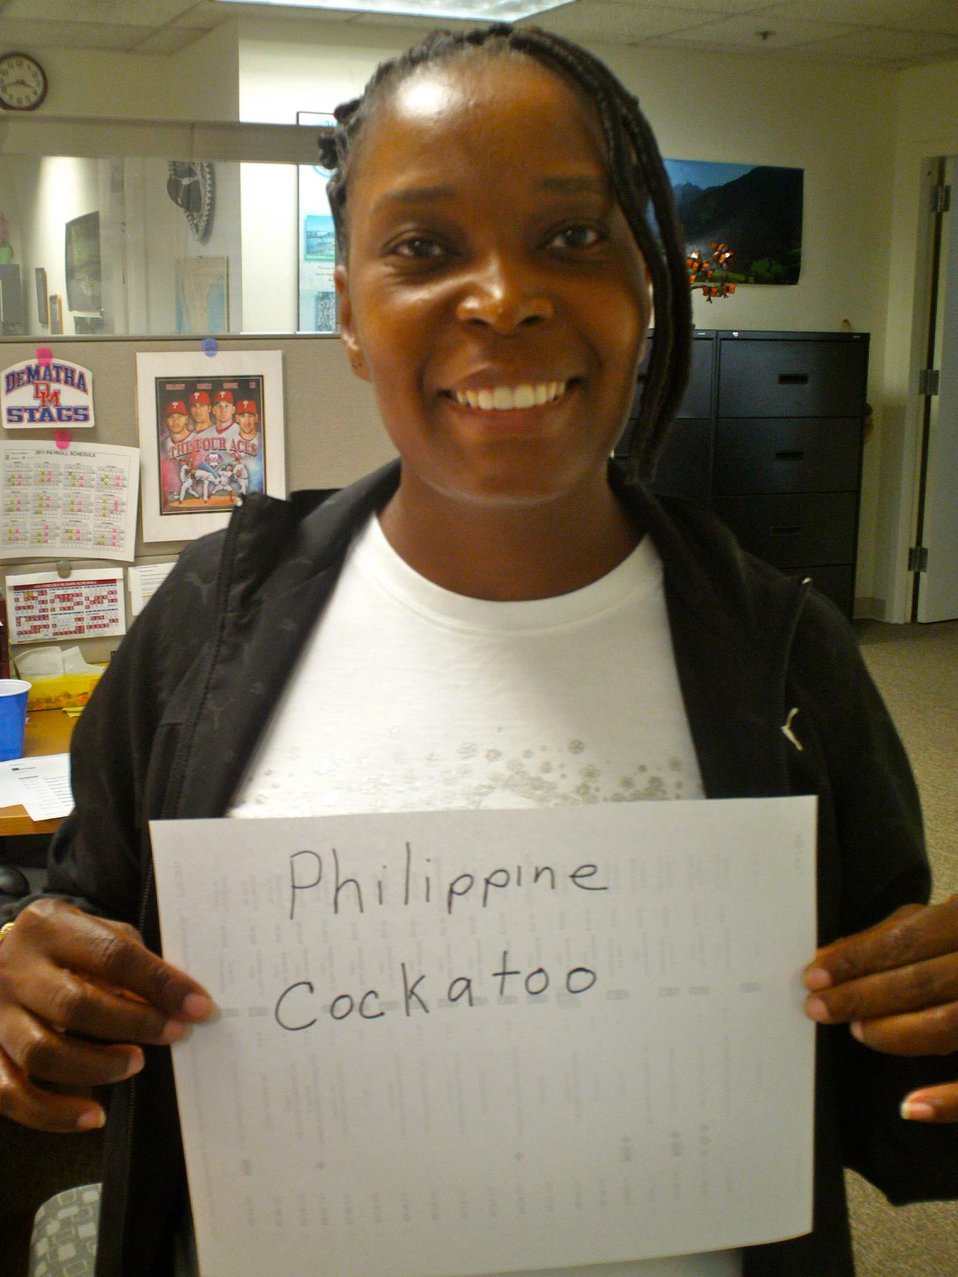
Sonia Williams, 'Philippine Cockatoo,'

International Affairs participates in FFI's In Our Hands campaign